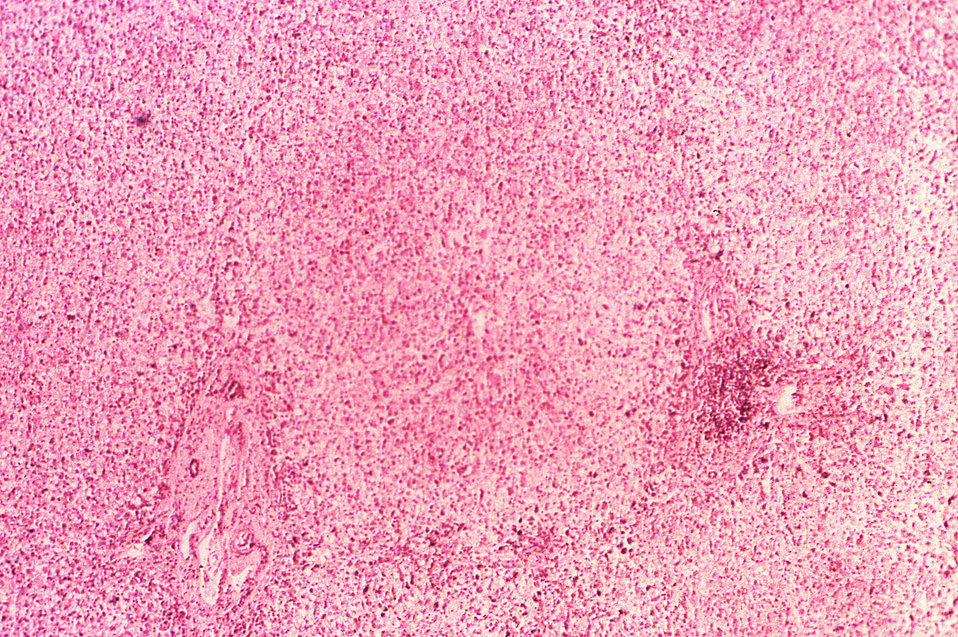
Under a low magnification of only 40X, this hematoxylin-eosin-stained (H&E) photomicrograph depicts the cytoarchitectural changes found in a liver tissue specimen extracted from a deceased yellow fever patient. This particular image reveals the presence of 'massive necrosis, which extends to the periportal region, where only a few hepatocytes remained.'. See PHIL 2176, and 8239, depicting TEMs of the yellow fever virus.